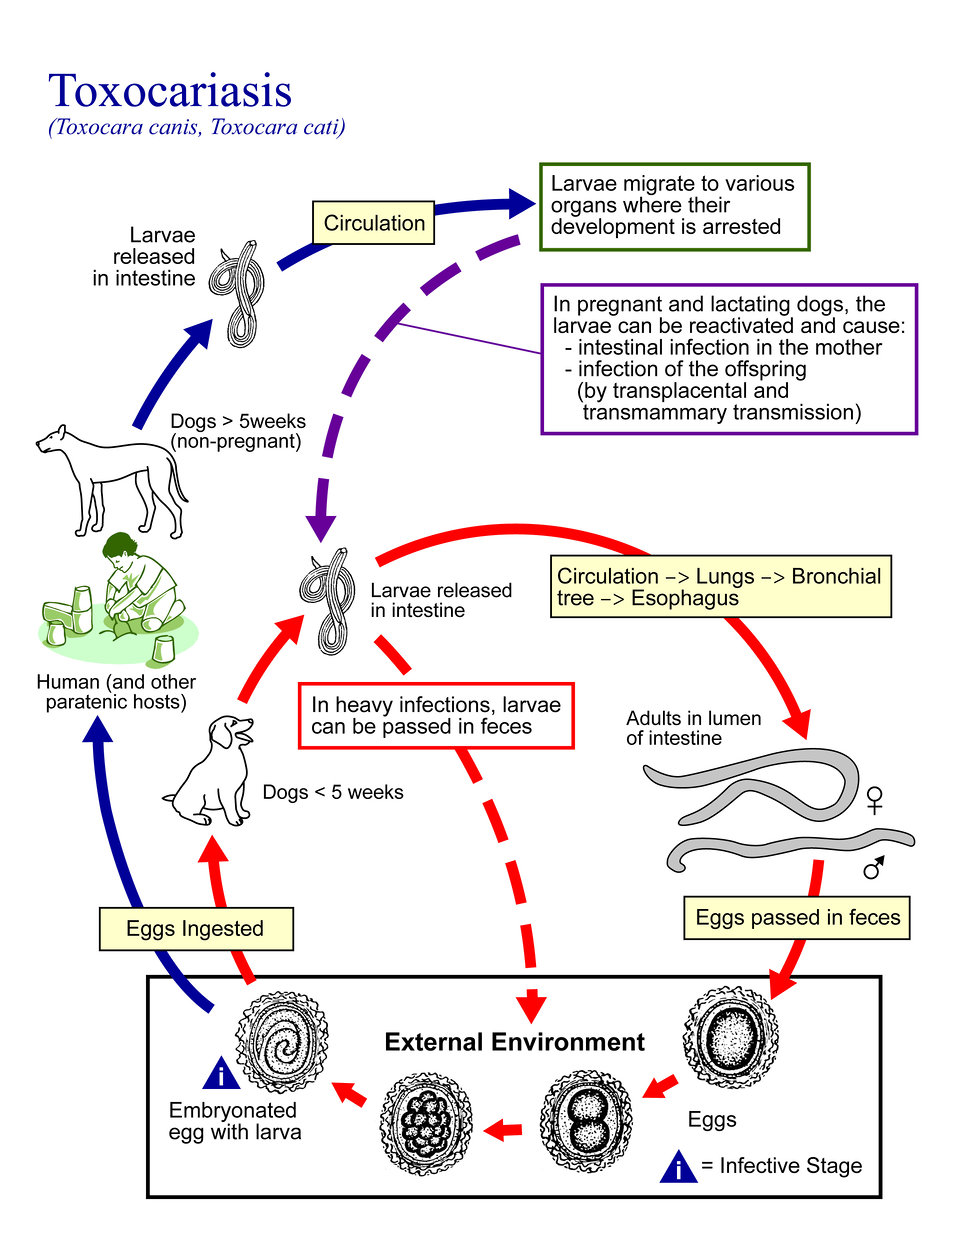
This is an illustration of the life cycle of Toxocara canis and Toxocara cati, the causal agents of Toxocariasis.